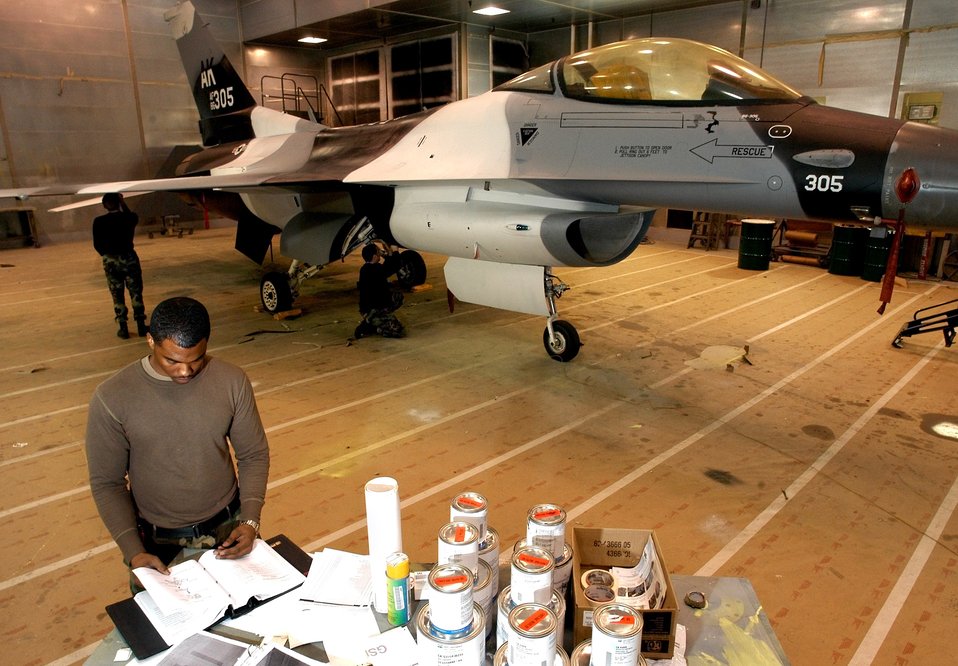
Kunsan Airmen paint arctic F-16 for Eielson

Staff Sgt. Cory Goines thumbs through a technical order manual for finishing instructions while Senior Airmen Kevin Stevens and Matt Wuensch take care of the final details on a newly painted arctic scheme F-16 Fighting Falcon Nov 30 at Kunsan Air Base, South Korea. All are aircraft structural maintenance journeymen with the 8th Maintenance Squadron, which painted the aircraft in preparation for an upcoming Eielson/Kunsan F-16 swap. The aircraft is the first unit to have the arctic scheme.